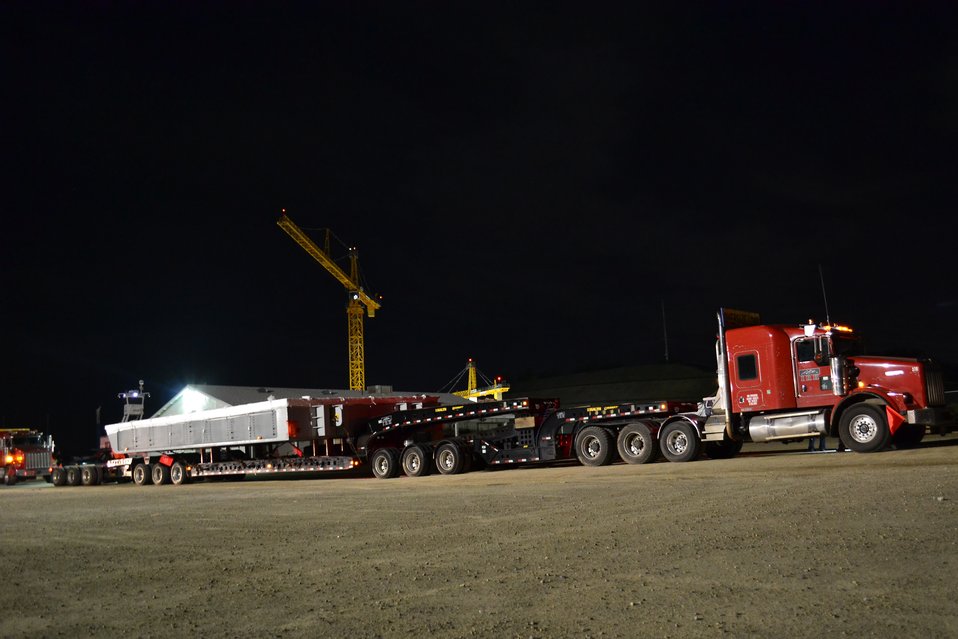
First giant gate arrives for Folsom Dam auxiliary spillway

The first of 12 giant gates arrives at Folsom Dam's new auxiliary spillway in Folsom, Calif., March 13, 2014, after a 600-mile journey from the Oregon Iron Works facility in Vancouver, Wash. The auxiliary spillway project is part of the Joint Federal Project, a $900-million cooperative effort to improve the safety of Folsom Dam and reduce flood risk for the Sacramento area.